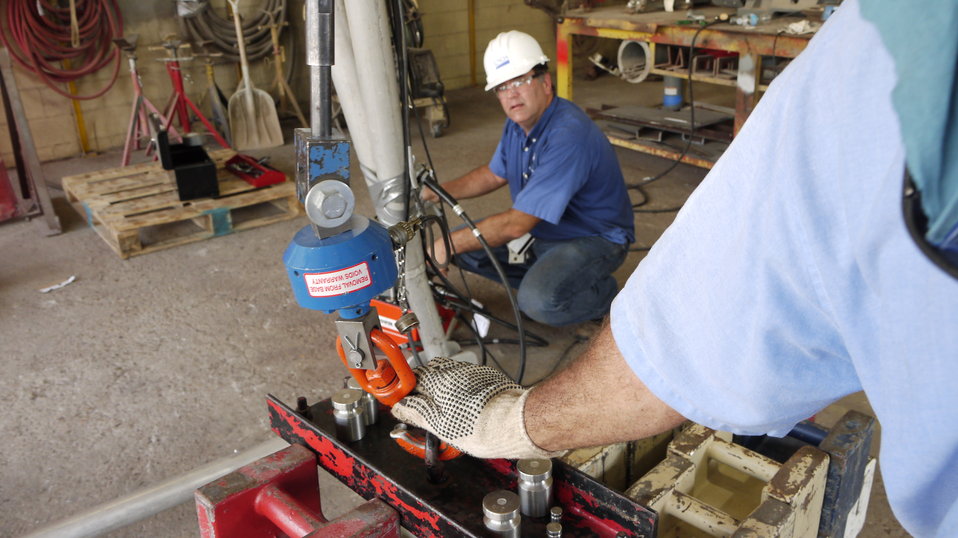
U.S. Department of Agriculture’s (USDA) Grain Inspection, Packers, and Stockyard Administration (GIPSA) industrial specialist Troy Kramer raises the USDA GIPSA test weight standards to obtain a weight reading that will be used to compare against the elevator owned test weight reading in order to calibrate the elevator weight at the grain elevator in Myrtle Grove, LA on Aug. 6, 2013. USDA GIPSA provides official testing of Automatic Bulk Weighing (Hopper) scales used in official certification of grain weight.